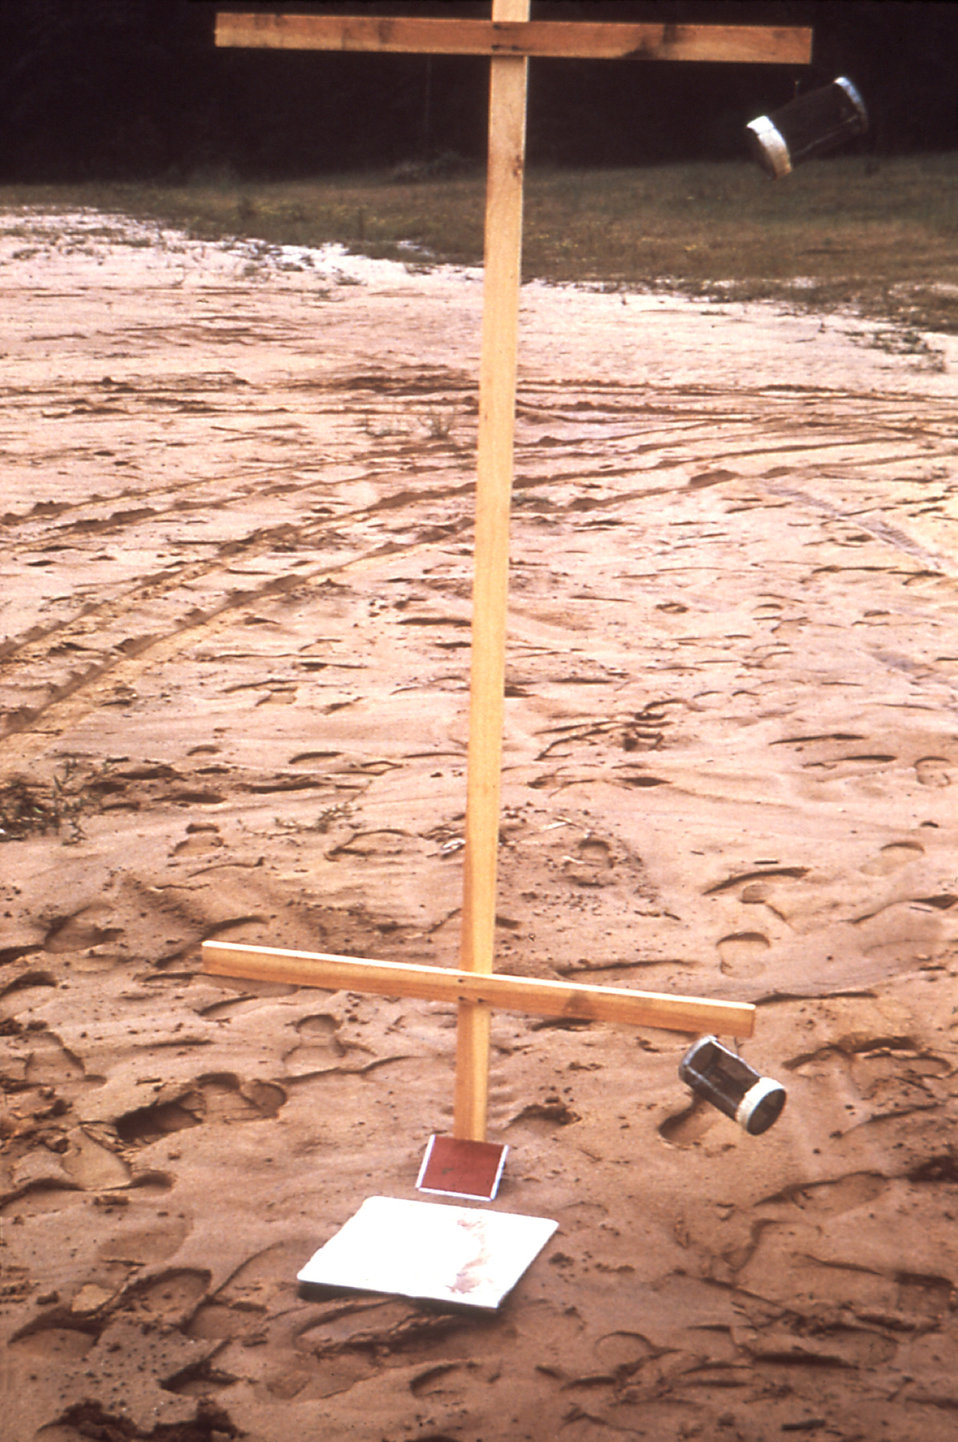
This 1981 photograph depicts the placement of two bioassay cages at two different heights, on the crossbars of a wooden stake that had been situated inside the geographic parameter of a bioassay insecticide study.